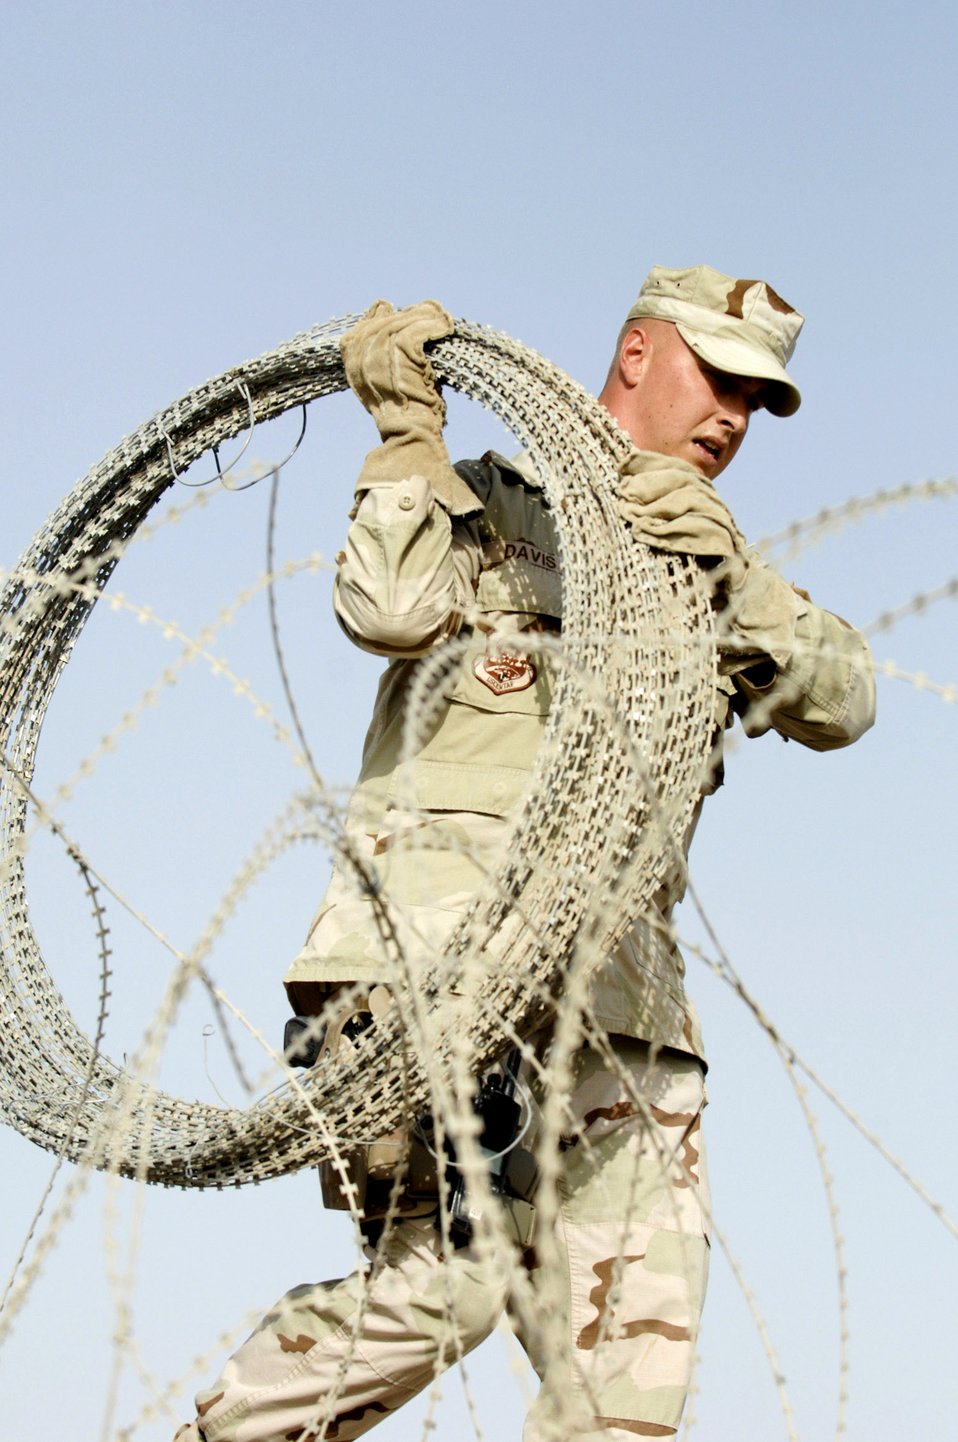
Wired for sound protection

Staff Sgt. Mark Davis carries concertina wire June 8 that he and his crew are installing on a wall to protect one of the compounds on Ali Air Base, Iraq. Sergeant Davis is a member of the 407th Expeditionary Security Forces Squadron's Force Protection Flight. The flight is responsible for monitoring local and third country nationals to detect suspicious activity, augmenting security forces during increased threat levels, as well as monitoring and maintaining installation security measures.